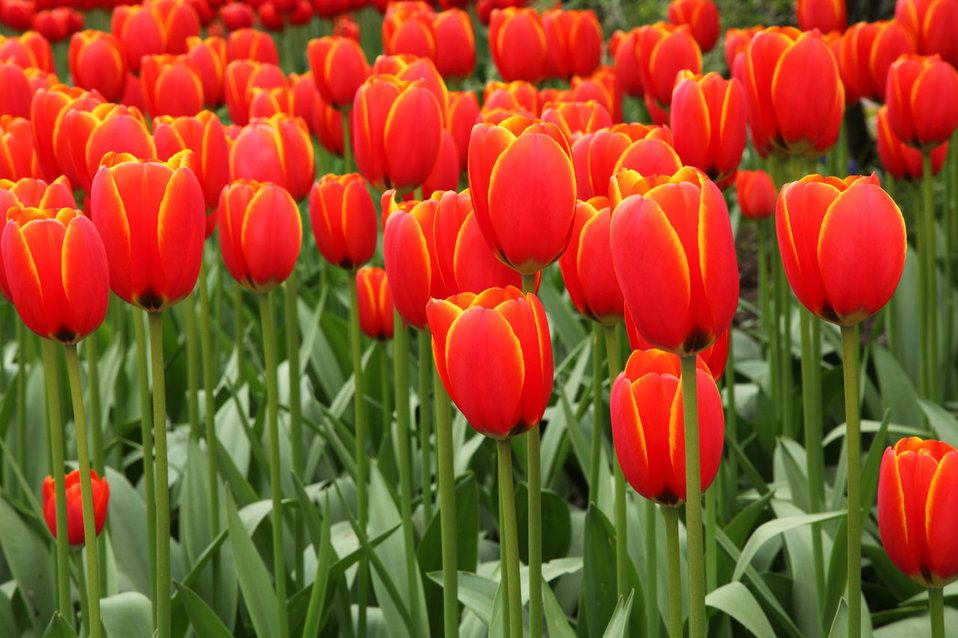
Red tulip background image.